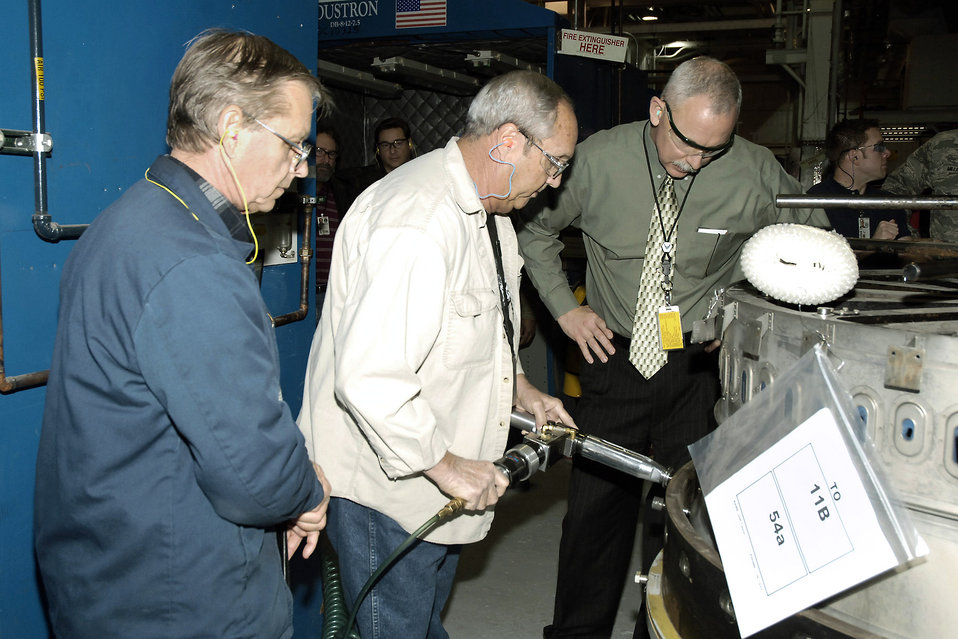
Improved drilling process is safer, saves money

Design engineer Tom Pence (left) and drill operator Jerry Heiskill (middle) show Oklahoma City Air Logistics Center Executive Director John Over the improved process for drilling a duct-liner at Tinker Air Force Base, Okla. Mr. Pence and Mr. Heiskill are part of a team that combined a process improvement and safety improvement to save the Air Force time and money.